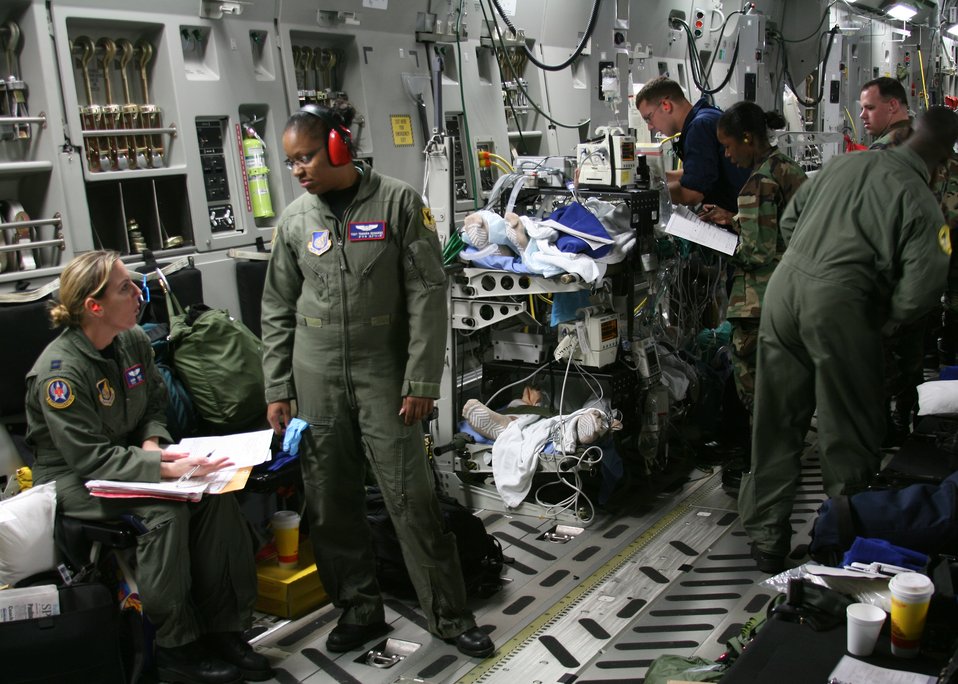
Medical Evacuation

Crewmembers attend to patients aboard a C-17 Globemaster III at Hickam Air Force Base, Hawaii. Six sailors from the USS Frank Cable were injured when a steamline burst while the sailors were conducting routine maintenance.